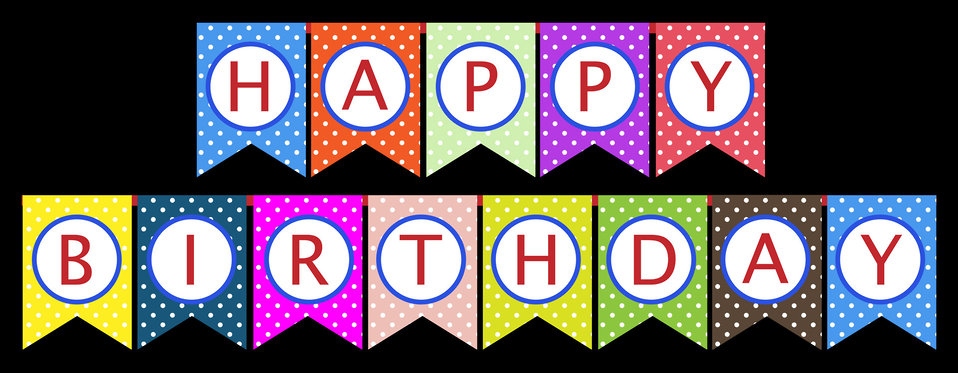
Birthday celebration bunting flags

Colorful polka dots happy birthday bunting flags.